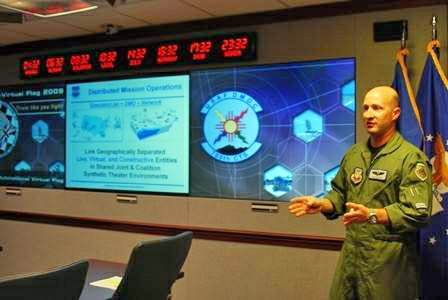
Airmen host multinational virtual training exercise

Lt. Col. Dan Pepper briefs observers at the end of Coalition Virtual Flag 09-4 Sept. 23, 2009, at the Pentagon. The multinational virtual training exercise involved Australia, Canada and England. The countries were among some 215 military members, civil servants and contractors across 25 worldwide locations who participated in the integrated training. Colonel Pepper is the 705th Combat Training Squadron director of operations at Kirtland Air Force Base, N.M.